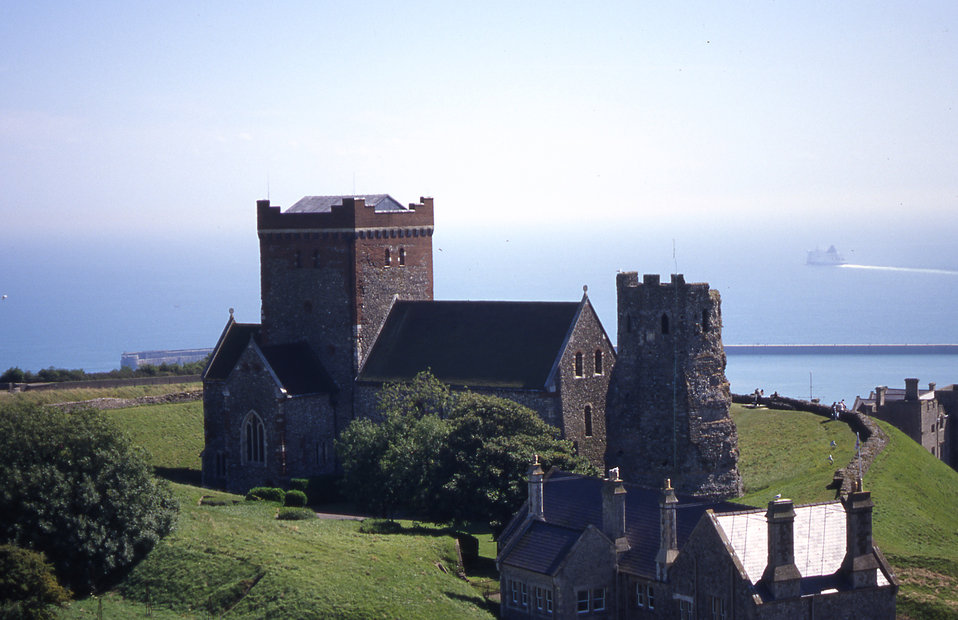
The English Channel as seen from Dover Castle (picture by Marco Sinibaldi, August 2005)
The church of St Mary in Castro in the grounds of Dover Castle, Kent, south-east England. (additional description by User:JackyR)